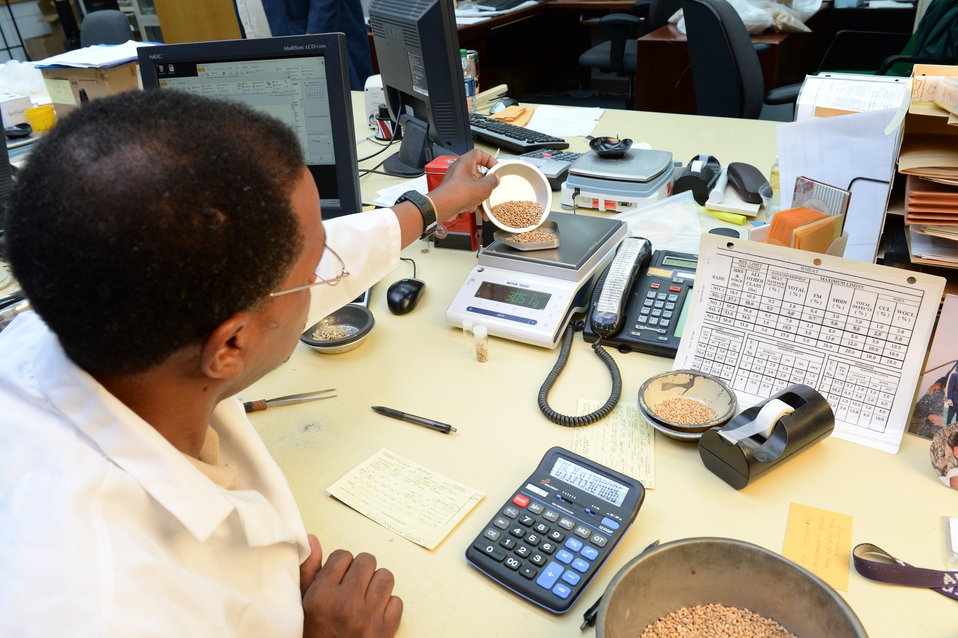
A U.S. Department of Agriculture (USDA) Grain Inspection, Packers and Stockyards Administration (GIPSA) Federal Grain Inspection Service (FGIS) scientist tests wheat at the FGIS inspection laboratory in New Orleans, LA on Monday, Nov. 18, 2013.